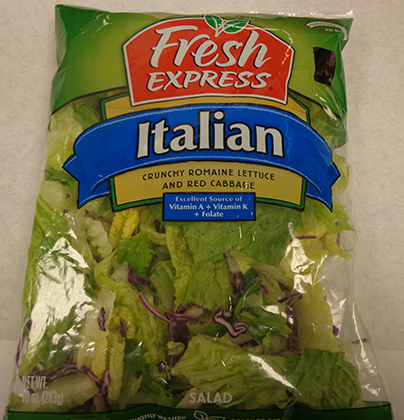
RECALLED – Italian Salad

March 28, 2014 – Product Recall – Fresh Express Issues Recall of Limited Quantity of Already Expired Italian Salad Due to Possible Health Risk, No Illnesses Cited.